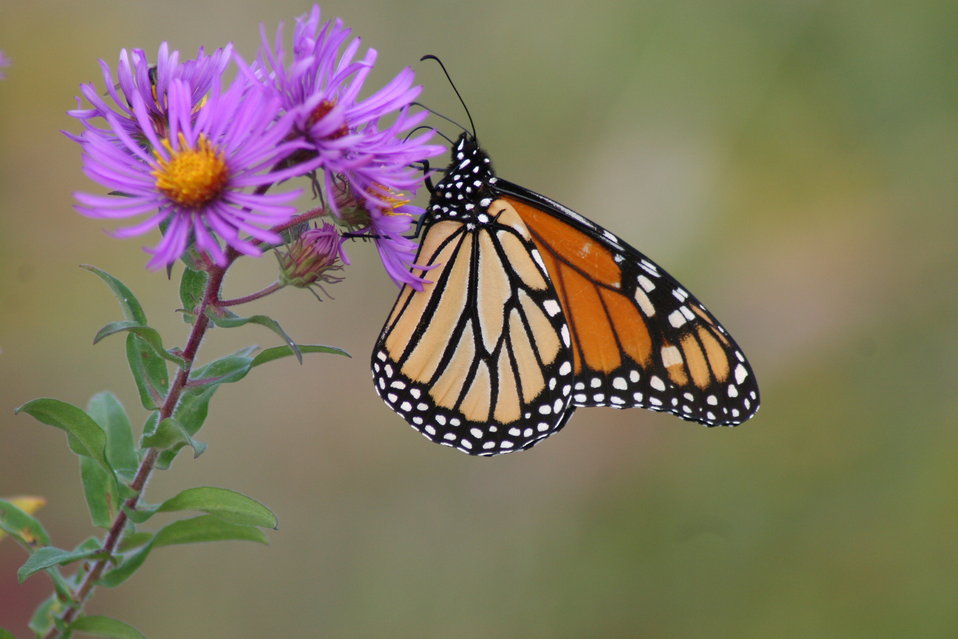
Monarch butterfly on New England Aster at Great Bay National Wildlife Refuge, Newington, NH.